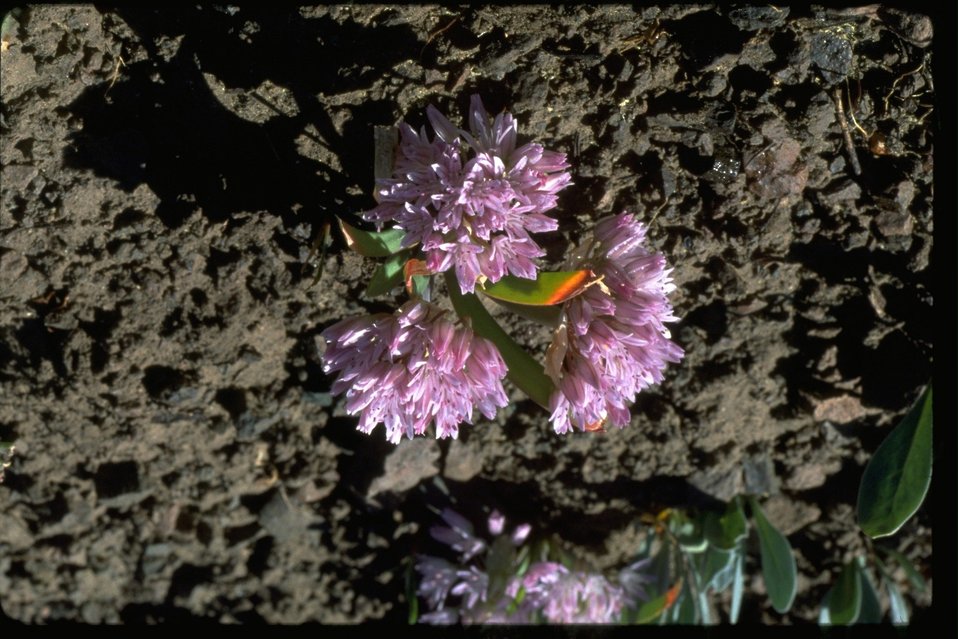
Medium shot of onion.